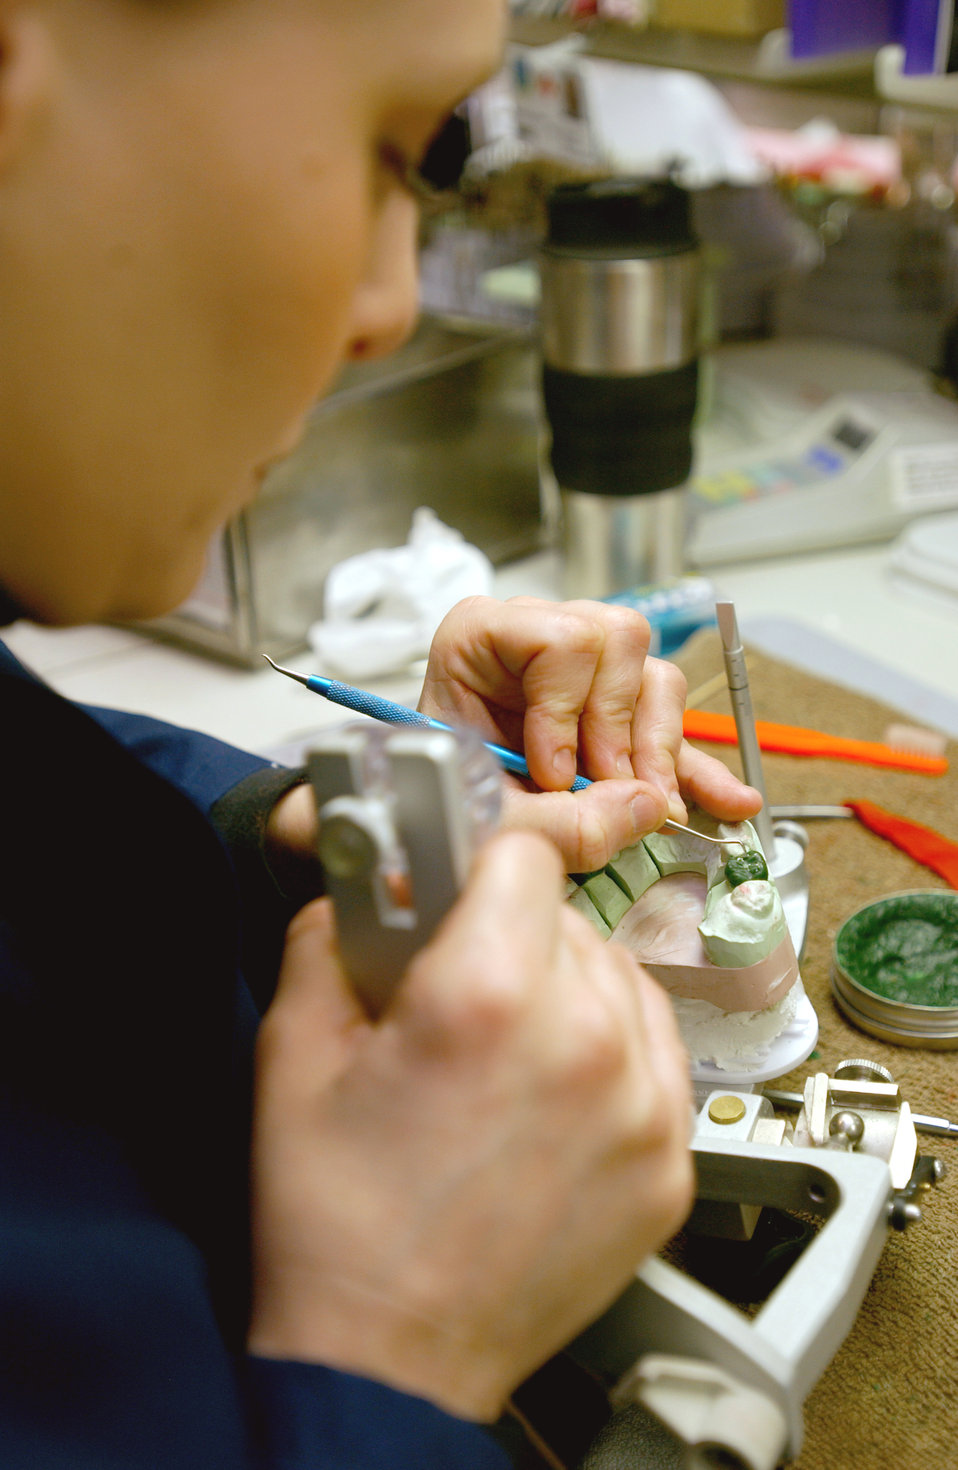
Crown me

ROYAL AIR FORCE LAKENHEATH, England -- Staff Sgt Jodi Hildebrandt uses melted wax to make a mold for a gold crown here March 24. SSgt. Hildebrandt is a dental lab craftsman with the 48th Dental Squadron here.